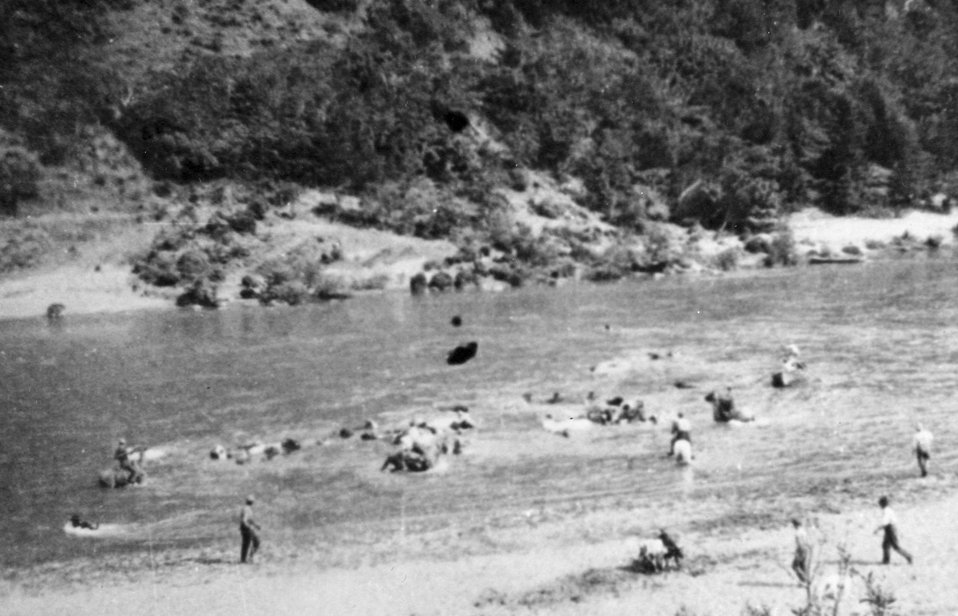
Swimming pack animals and stock across the Rogue River.